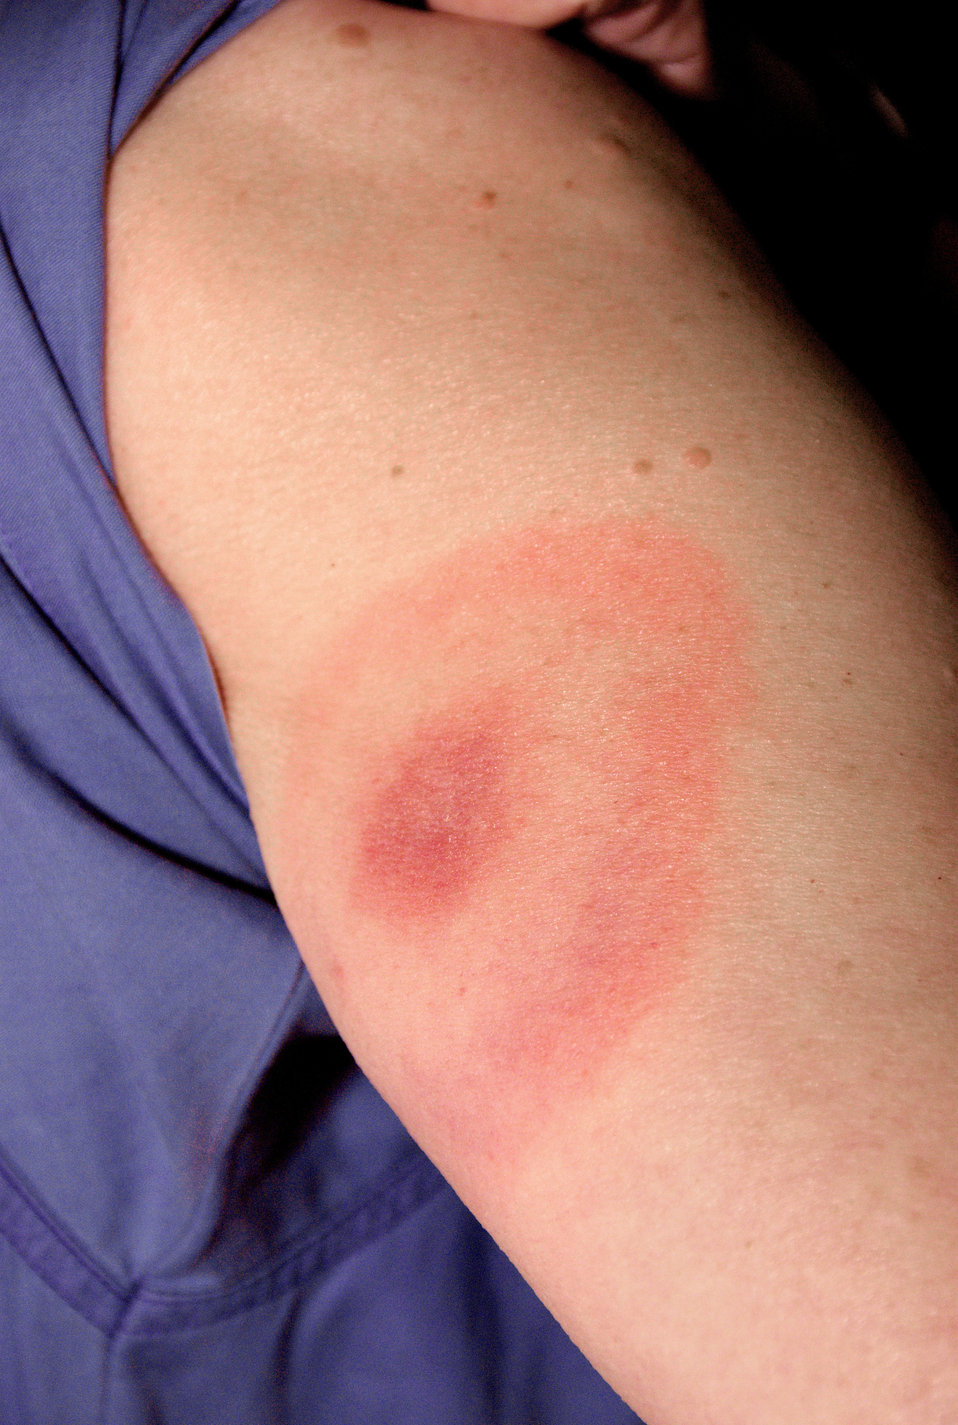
This 2007 photograph depicts the pathognomonic erythematous rash in the pattern of a 'bull's-eye', which manifested at the site of a tick bite on this Maryland woman's posterior right upper arm, who'd subsequently contracted Lyme disease.Lyme disease patients who are diagnosed early, and receive proper antibiotic treatment, usually recover rapidly and completely. A key component of early diagnosis is recognition of the characteristic Lyme disease rash called erythema migrans. This rash often manifests itself in a 'bull's-eye' appearance, and is observed in about 80% of Lyme disease patients.